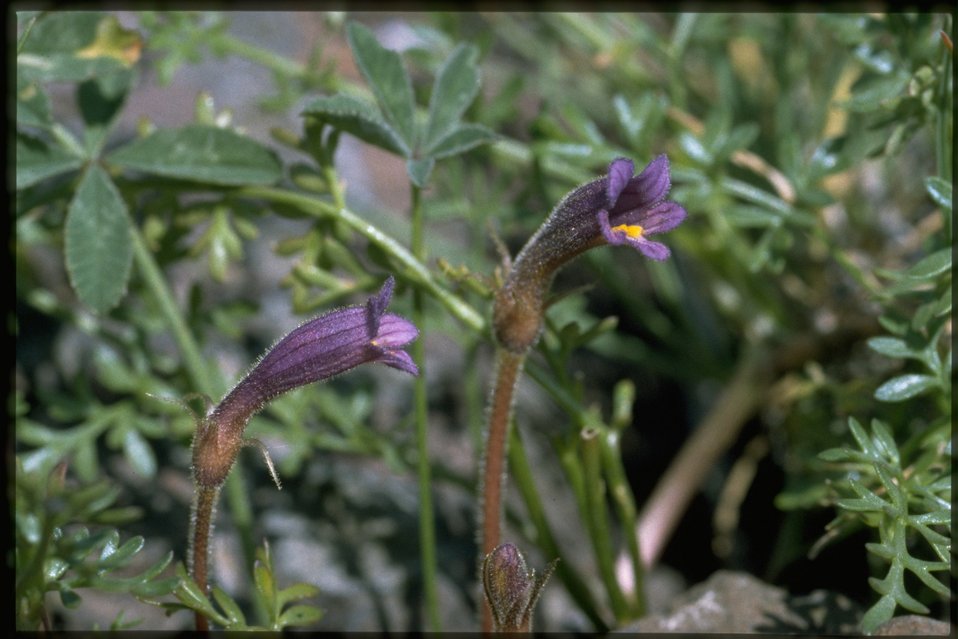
Medium shot of Naked Broomrape wildflowers (Orobanche Uniflora).